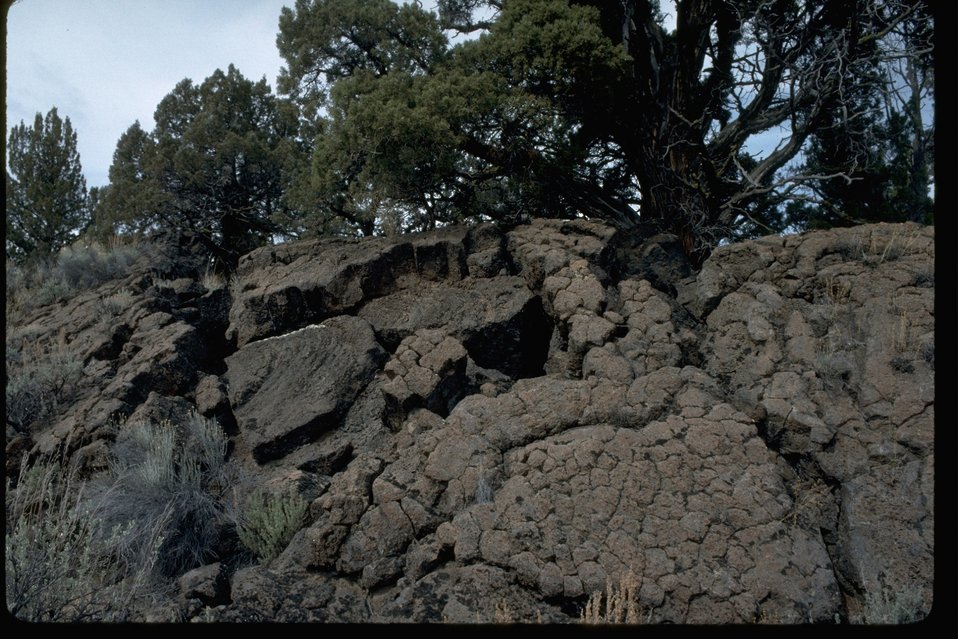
The lava beds in the Badlands Wilderness Study Area. OR 5-21